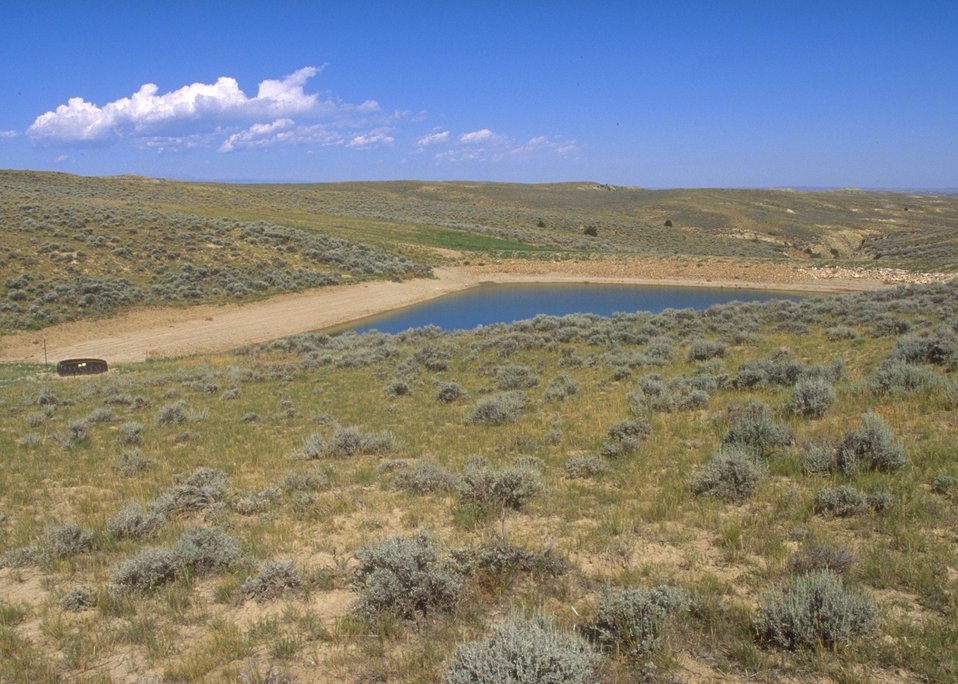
Reservoir for storage of water used in production of coal bed methane, Buffalo Field Office.